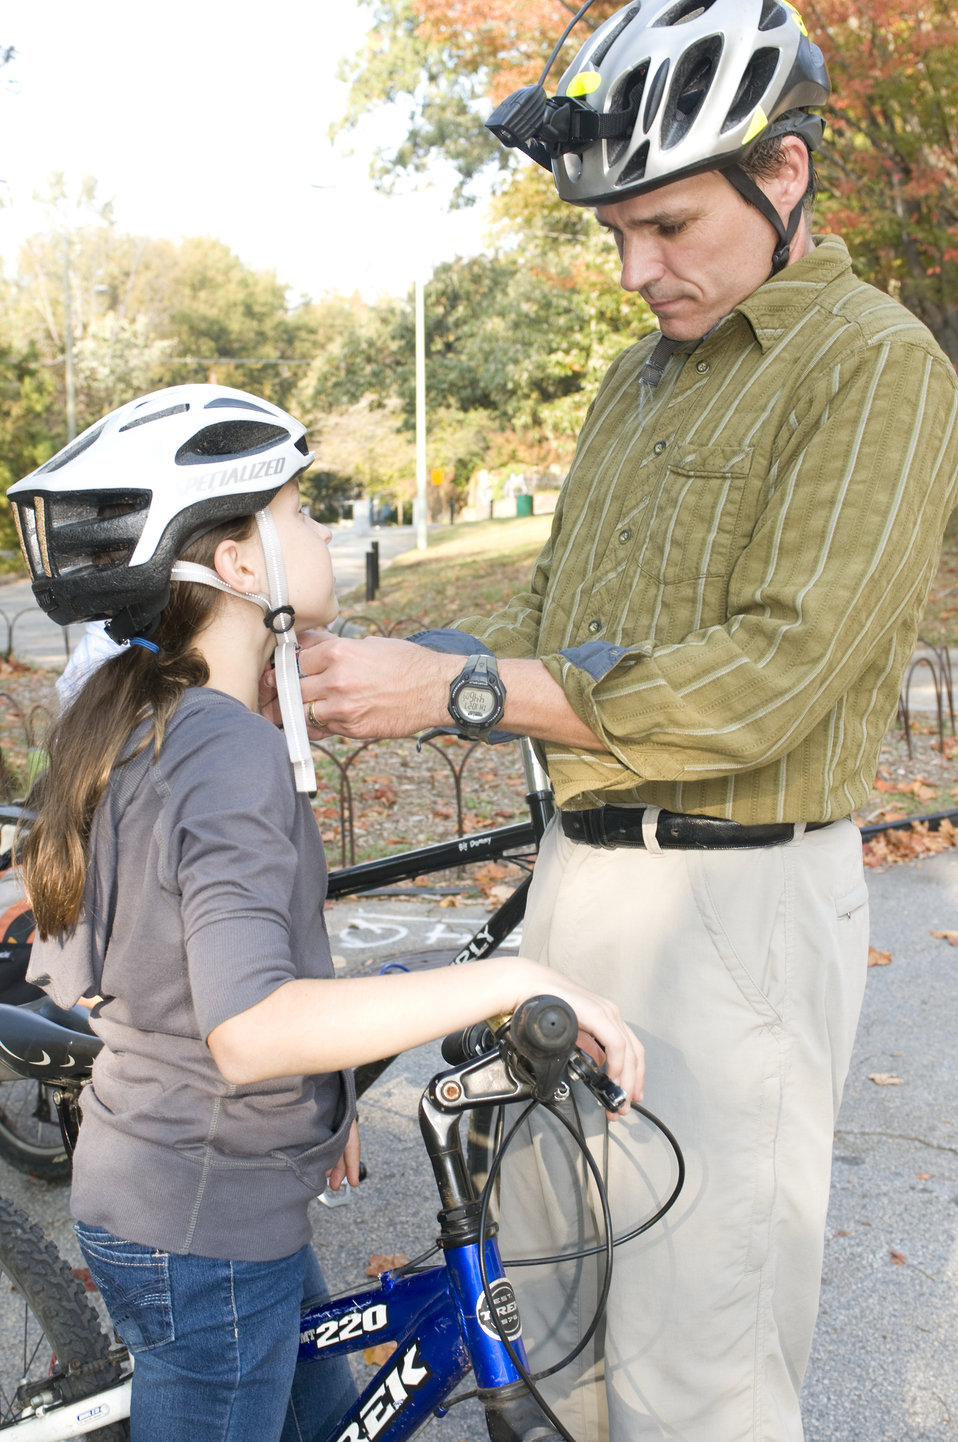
This photograph depicts a father and daughter about to embark on a beautiful Georgian afternoon bicycle ride. At this point in their preparation, after dad had secured his own protective helmet, he was in the process of securing his daughter's helmet by adjusting the straps below her chin. These high-tech helmets are aerodynamic, and permit a cooling flow of air to reach the wearer's scalp, and are very light-weight as well.